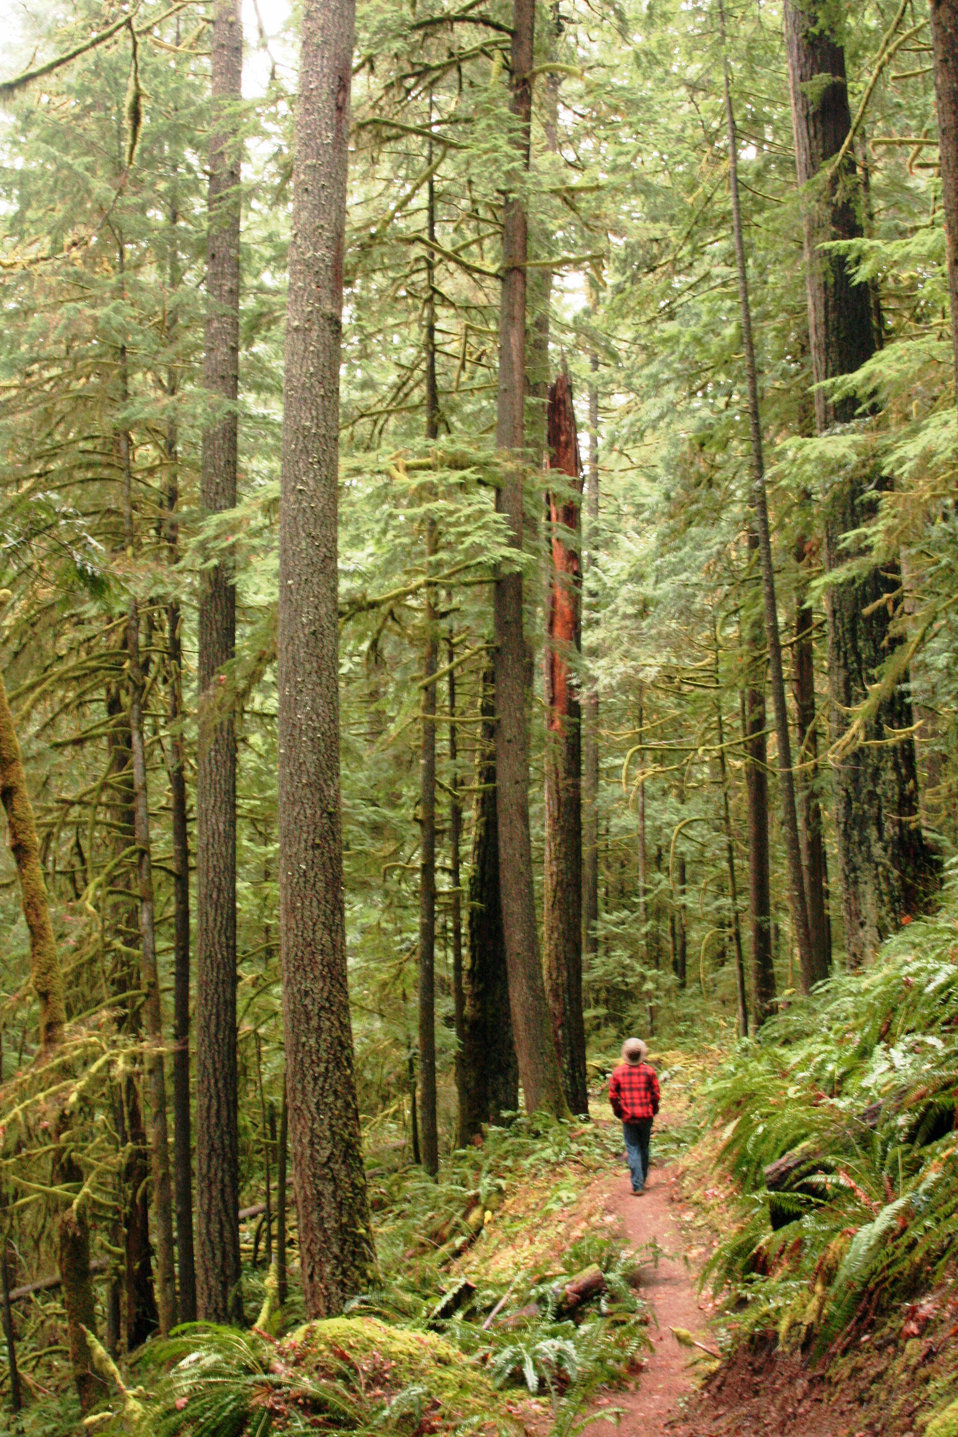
Grow site safety

Be aware of your surroundings when visiting National Forest System land. Deception Creek Trail. Willamette National Forest, Oregon.